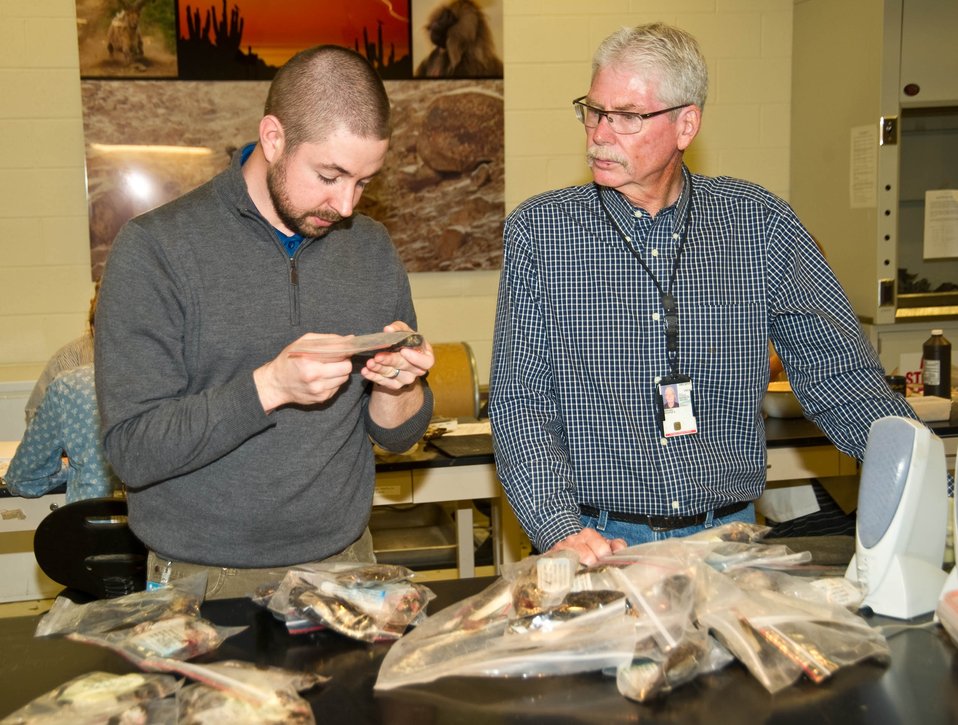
Smithsonian Institution National Museum of Natural History Feather Identification Lab Research Scientist Jim Whatton and U.S. Department of Agriculture (USDA) Animal and Plant Health Inspection Service (APHIS) Wildlife Service Biologist Idaho State director George Graves look over a sample of the birds and mammals on Tuesday, Mar. 19, 2013. Graves sent 1,300 feather specimens to the Smithsonian from Afghanistan.